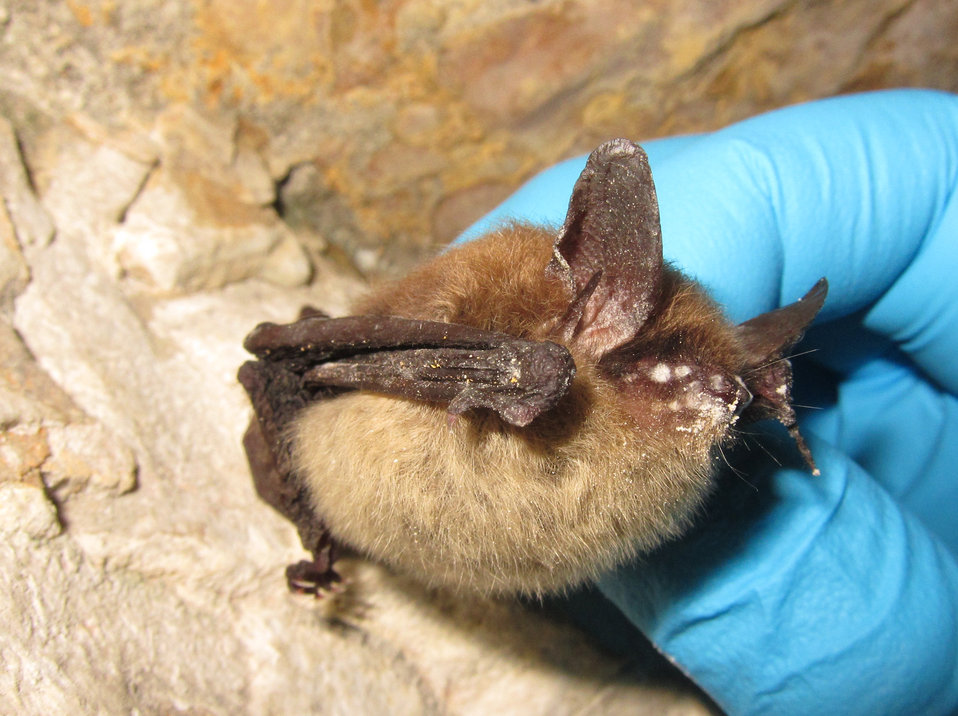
Northern long-eared bat with visible symptoms of WNS

Myotis septentrionalis, northern myotis (Vespertilionidae) with growth of Geomyces destructans clearly evident. LaSalle County, Illinois. January 2013